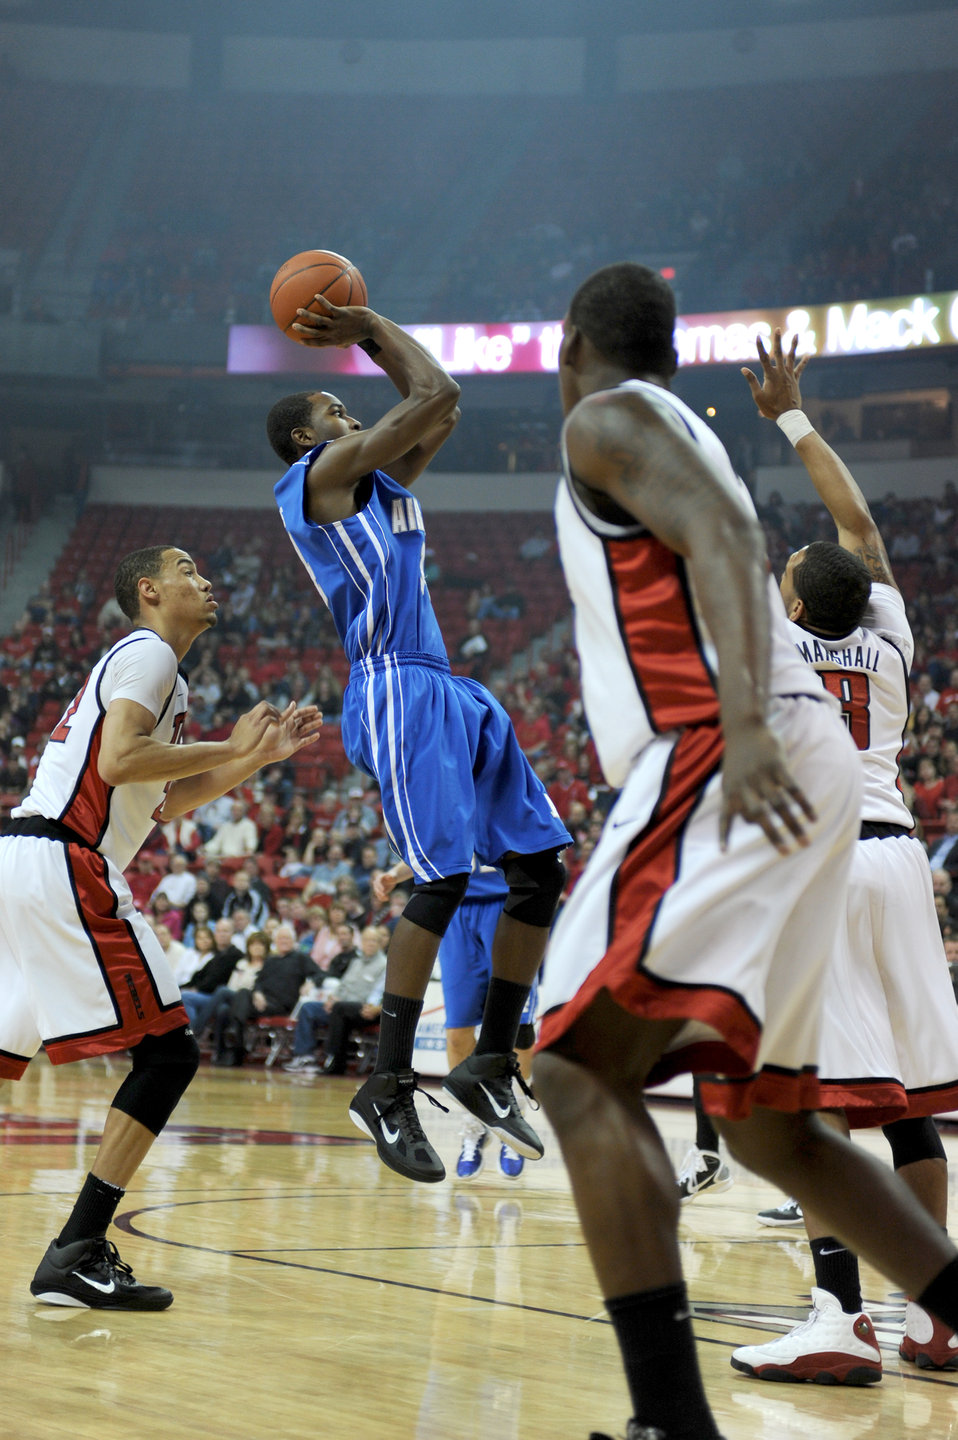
Falcons versus Rebels

Falcons sophomore guard Michael Lyons pulls up for a jump shot against the University of Nevada, Las Vegas, Feb 15, 2011, at the Thomas and Mack Center in Las Vegas, Nev. The Air Force Falcons came up short against UNLV 49-42, making their record 13-11 overall and 4-7 in the Mountain West Conference.